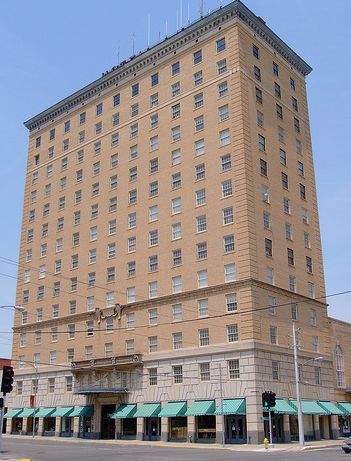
San Angelo Cactus Hotel, old Hilton.